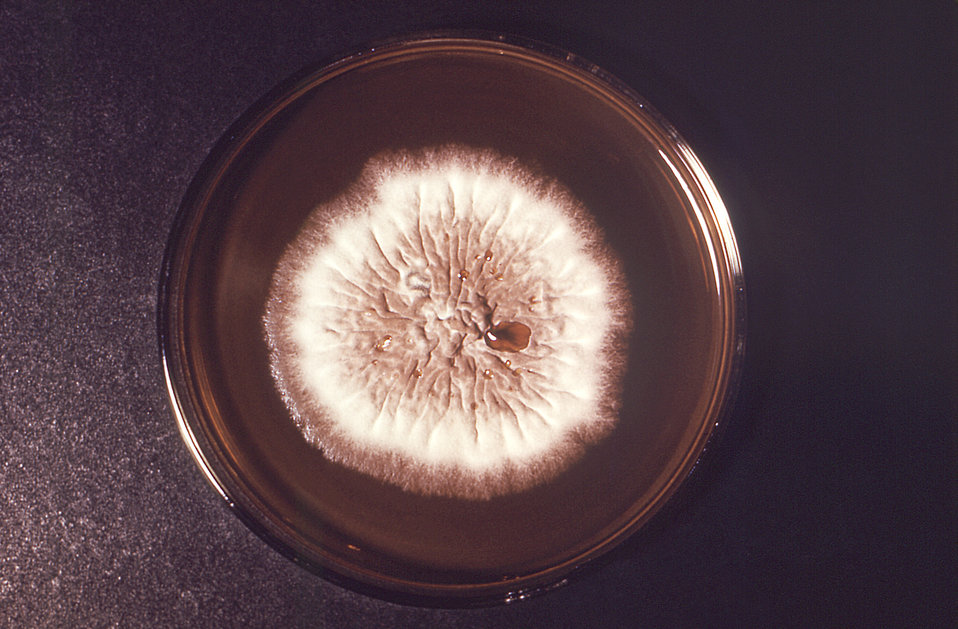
This Petri dish culture containing Sabouraud dextrose agar, had grown a single, large colony of the dermatophytic fungus, Trychophyton megninii. Colonies of this anthropophilic specie display a waxy to cottony appearance, and a coloration ranging from a white to bright yellowish-beige or red violet. For a reverse view of a T. megninii colony, see PHIL 14950.